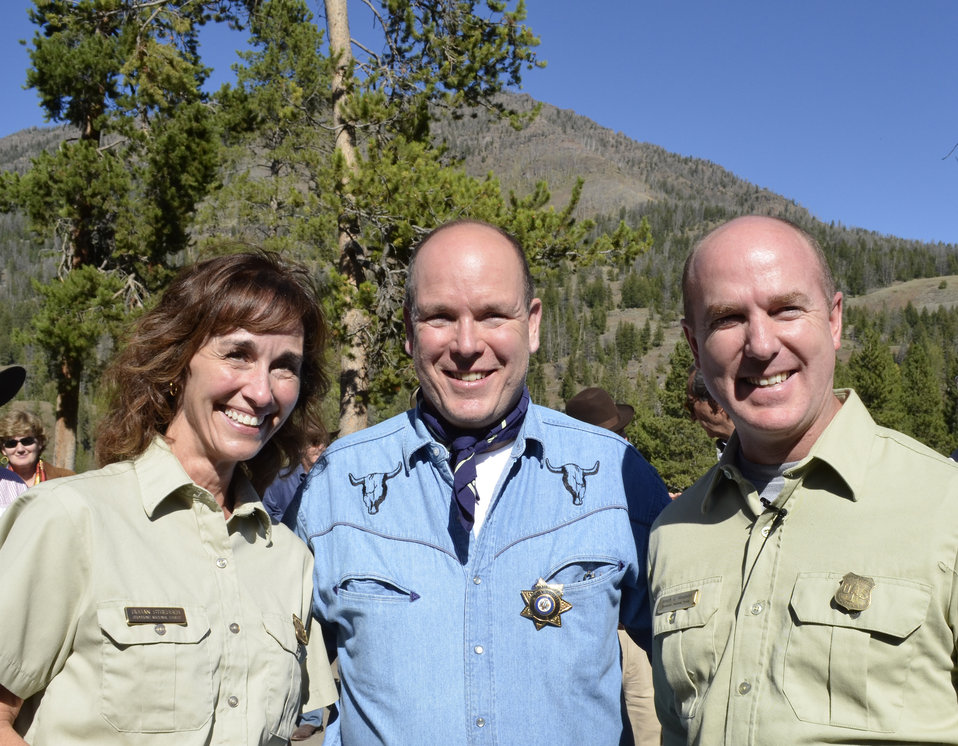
Prince Albert, Joe Alexander NS Sue Stresser

His Serene Highness (HSH) Prince Albert II of Monaco (center) stands with Wapiti District Ranger Sue Stresser and Shoshone Forest Supervisor Joe Alexander in the Shoshone National Forest, WY on Sep. 20, 2013.